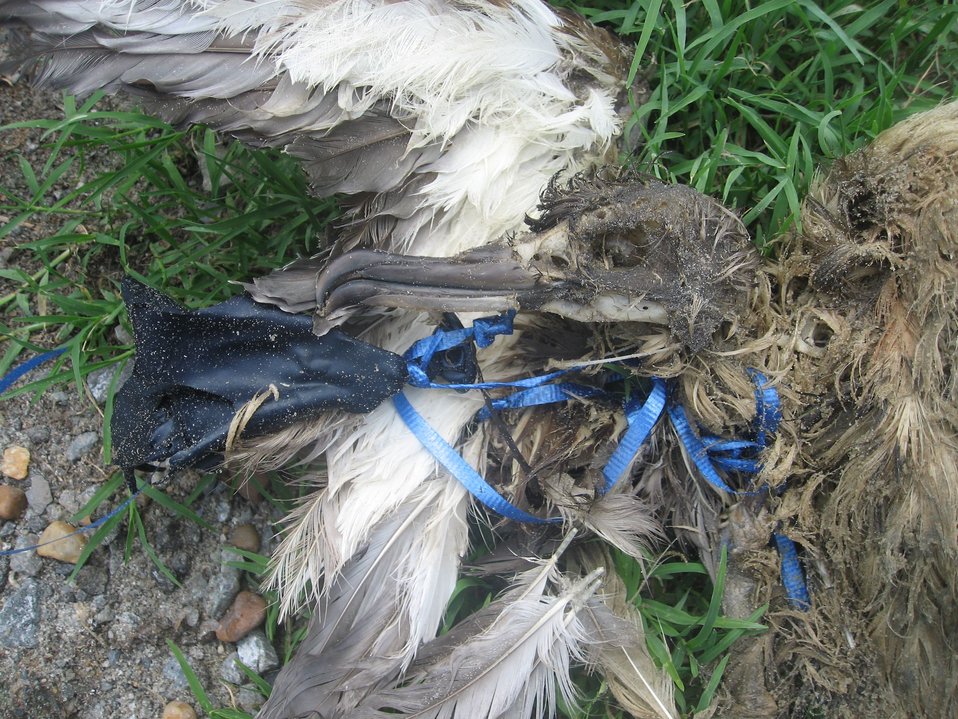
Dead bird in balloon string